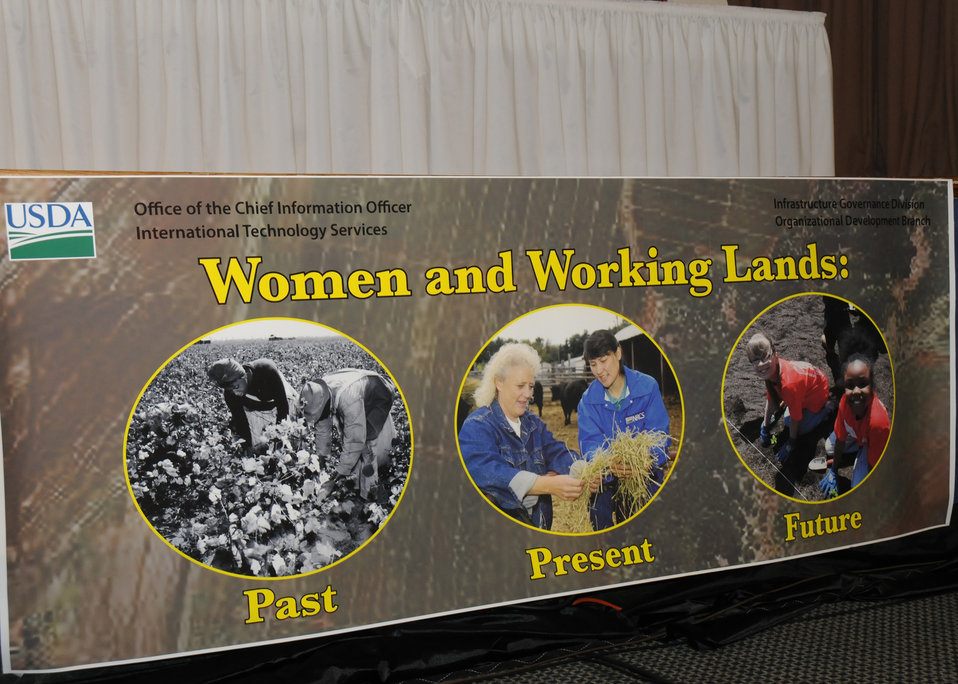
The Women and Working Lands: Past, Present, Future conference was held in the Jefferson Auditorium at the Department of Agriculture in Washington, D. C., on Thursday, Mar. 25, 2010. USDA photo 10di1283-41